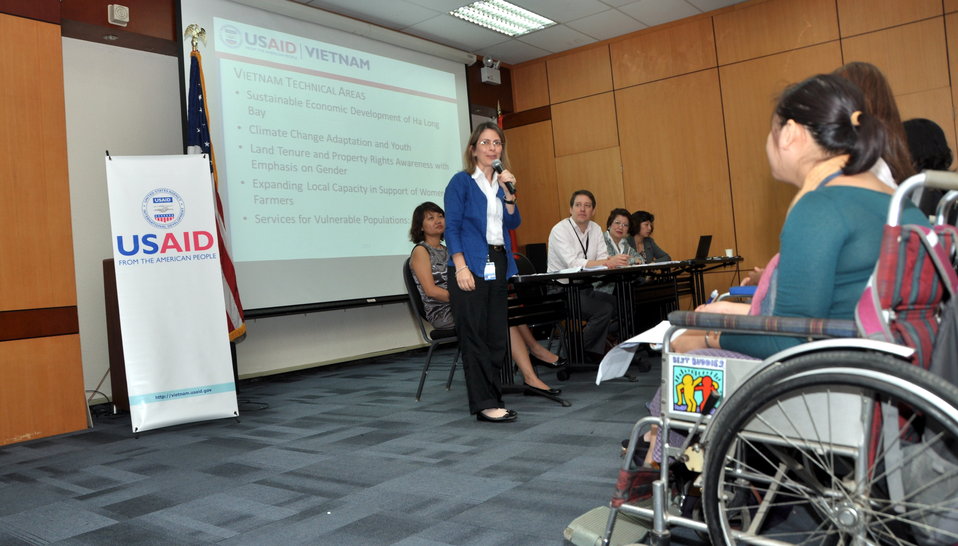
Development Grants Program Workshop in Hanoi

July 24, 2013